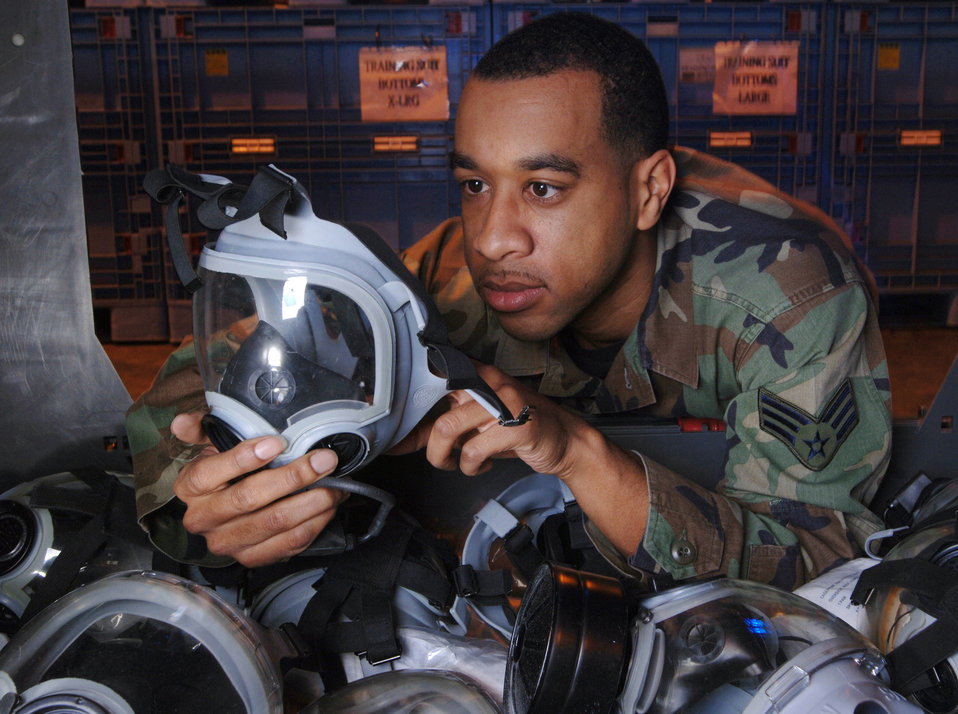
Mask inspection

YOKOTA AIR BASE, Japan (AFPN) -- Senior Airman Jamal Johnson inspects gas masks for serviceability during an inventory. Airman Johnson is a war readiness technician with the 374th Logistics Readiness Squadron, which manages 26,000 critical supplies and equipment.